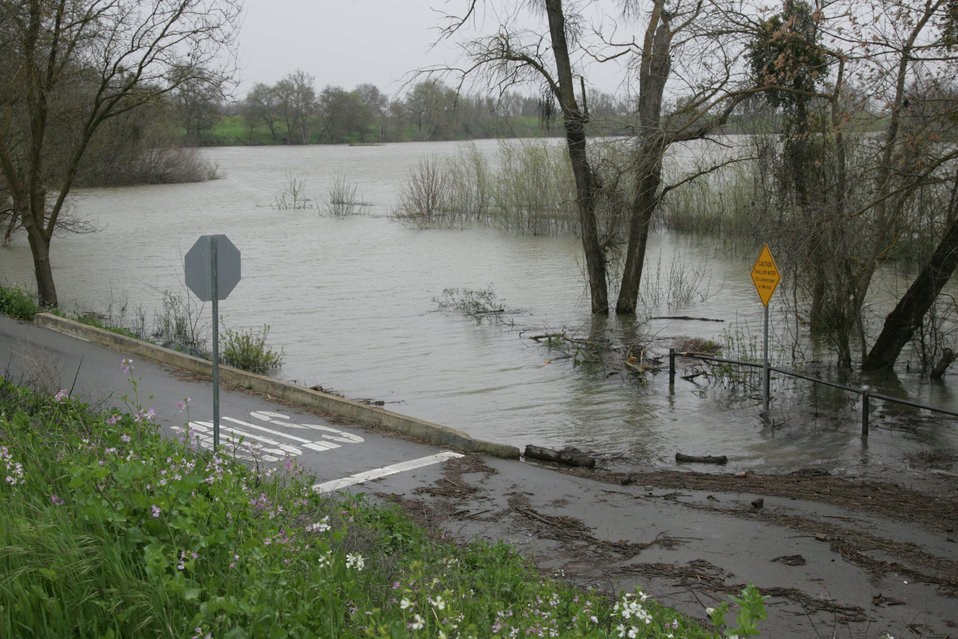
YUBA COUNTY, Calif. (March 24, 2001) --- A view of the high water levels on the Feather River near the recently completed setback levee at Star Bend in the Plumas Lake area here March 18. The U. S. Army Corps of Engineers Sacramento District is monitoring flood control projects in the Sacramento region as a series of rainstorms continue to heavily hit northern California. Construction of the Feather River setback levee began in 2008. It was completed in October 2009 by the Sacramento District, the Three Rivers Levee Improvement Authority and Teichert Construction. Levee maintenance and repair is the responsibility of local agencies. The Sacramento District continues to coordinate with the California Department of Water Resources and is ready to respond to flood emergencies if the state requests federal assistance.